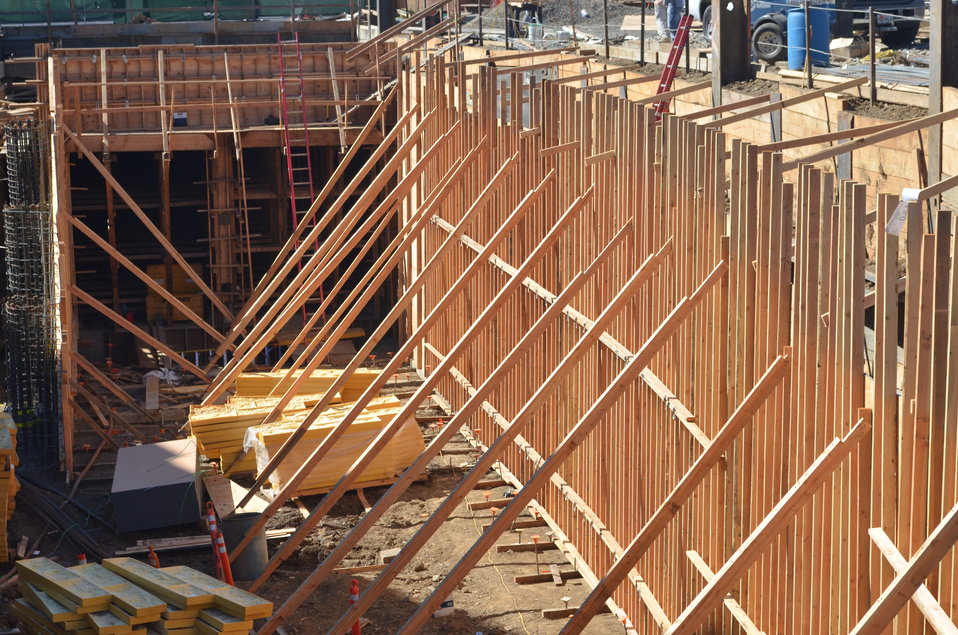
Napa flood risk reduction efforts

Ongoing construction in Napa Creek to build a culvert to increase the creek's ability to carry some of the demand during high water events. (US Army Corps of Engineers/DeDe Cordell)